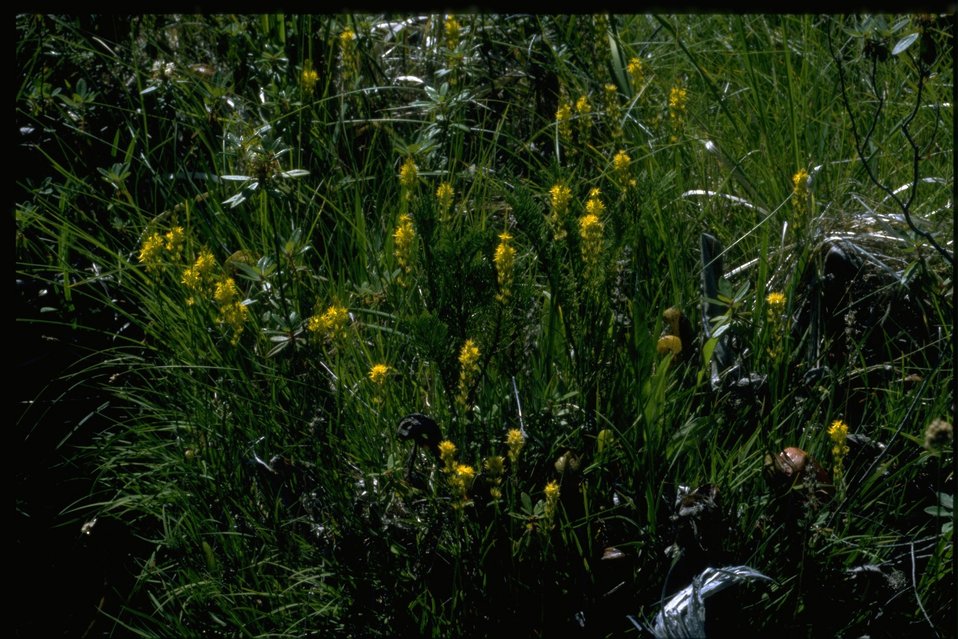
Farshot of Northecium californicum.